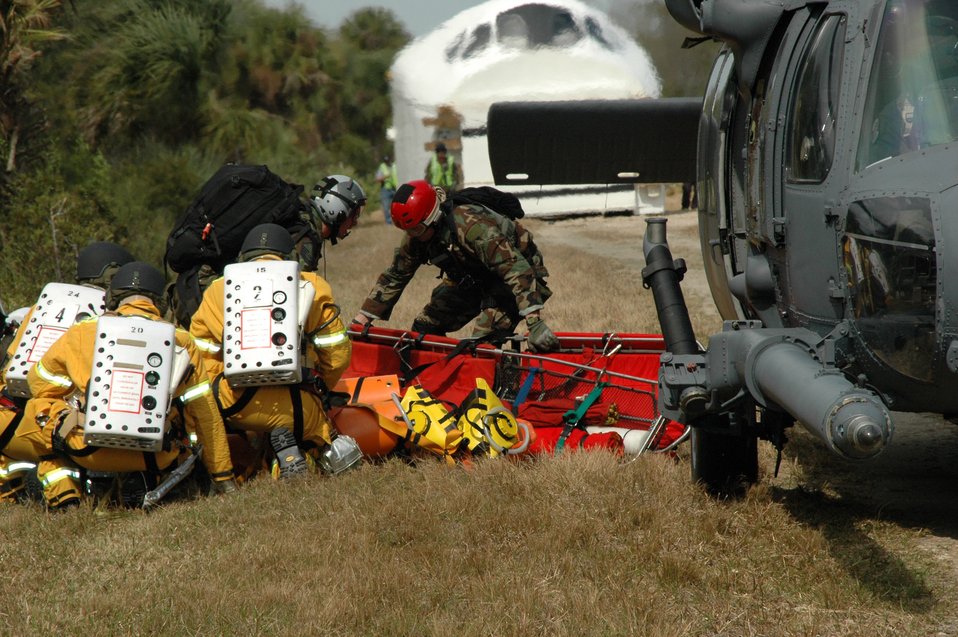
NASA exercise tests rescue wing skills

308th Rescue Squadron pararescuemen and NASA emergency firefighters offload emergency equipment from a 301st RQS HH-60 Pave Hawk for an exercise at Cape Canaveral Air Force Station, Fla. Feb. 13. The exercise allowed rescue workers to train in egress and encompassed NASA, the 45th Space Wing and the Air Force Reserve's 920th Rescue Wing, both at Patrick Air Force Base.